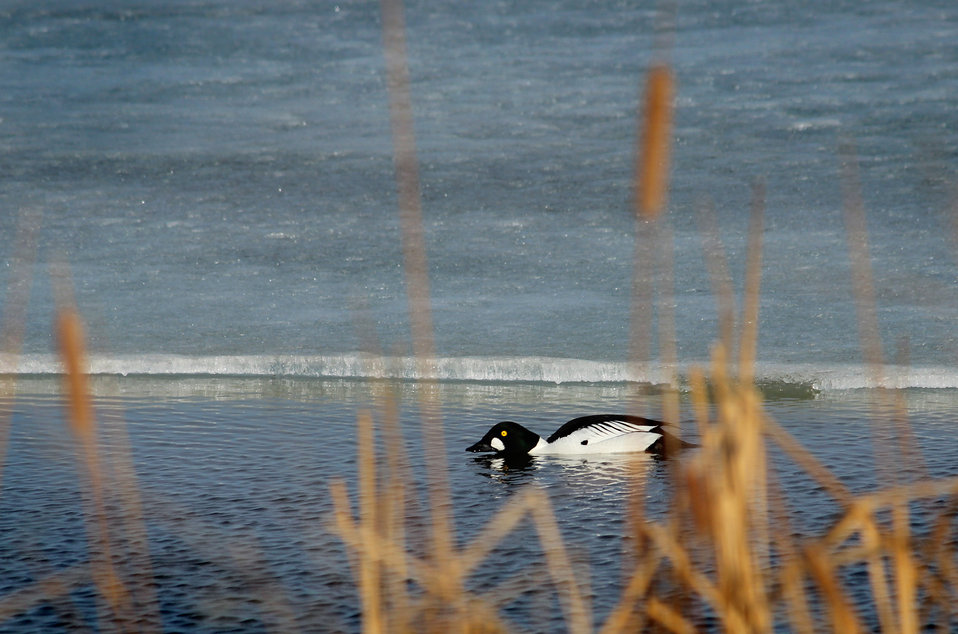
Common Goldeneye

This Common Goldeneye (Bucephala clangula) attempted to hide from me on the Lundgren WPA in LaMoure County. Goldeneye are in the group of ducks considered 'Divers'.